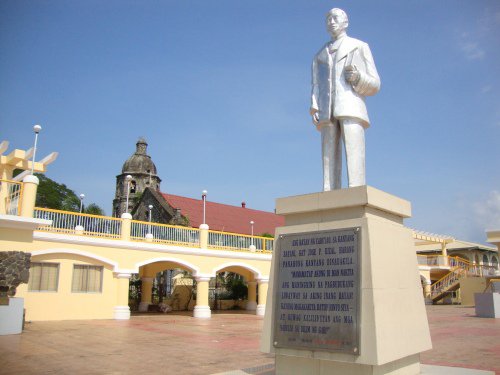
Inside the Cabuyao Town Plaza, Cabuyao